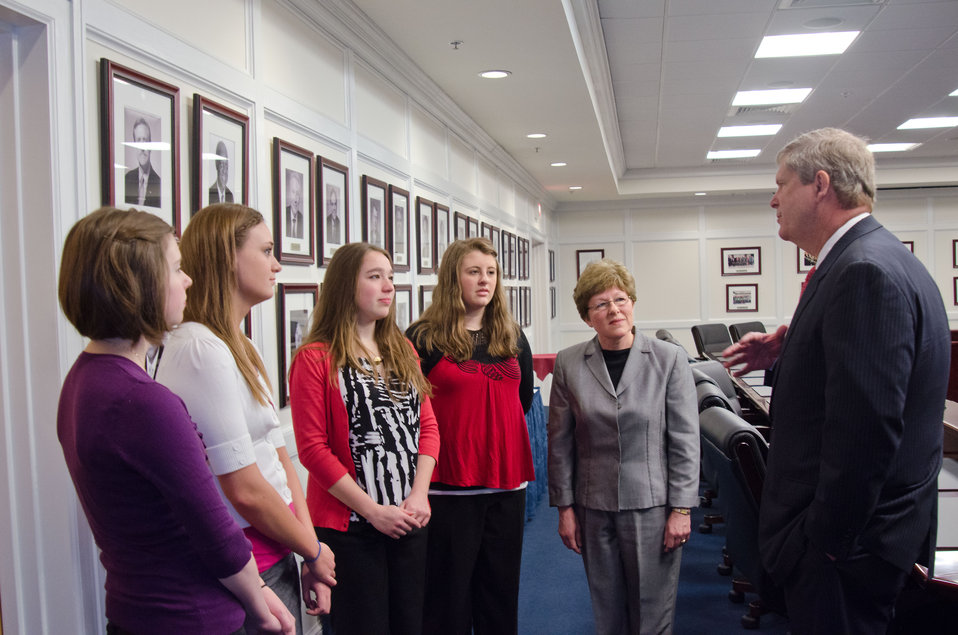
Agriculture Secretary Tom Vilsack speaks with Iowa State University 4-H members (l to R) Abigail Peterson, Savannah Ruby, Amy Prestholt, Kayla Krull and Iowa State University Extension and Outreach youth program specialist Carol Ehlers at the National 4-H Youth Center in Chevy Chase, MD, on Monday, March 26, 2012.